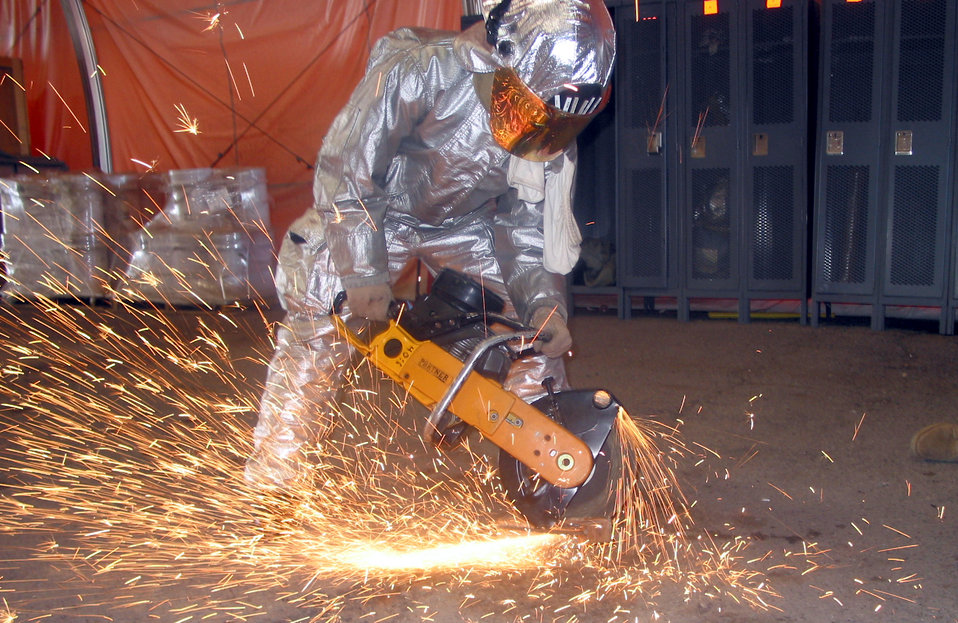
Firefighters keep flames at bay

MANAS AIR BASE, Kyrgyzstan -- Senior Airman Steven Kuzel practices cutting through a metal obstruction with a K-12 cutting saw at the flightline fire station here. Airman Kuzel is assigned to the 376th Expeditionary Civil Engineer Squadron.